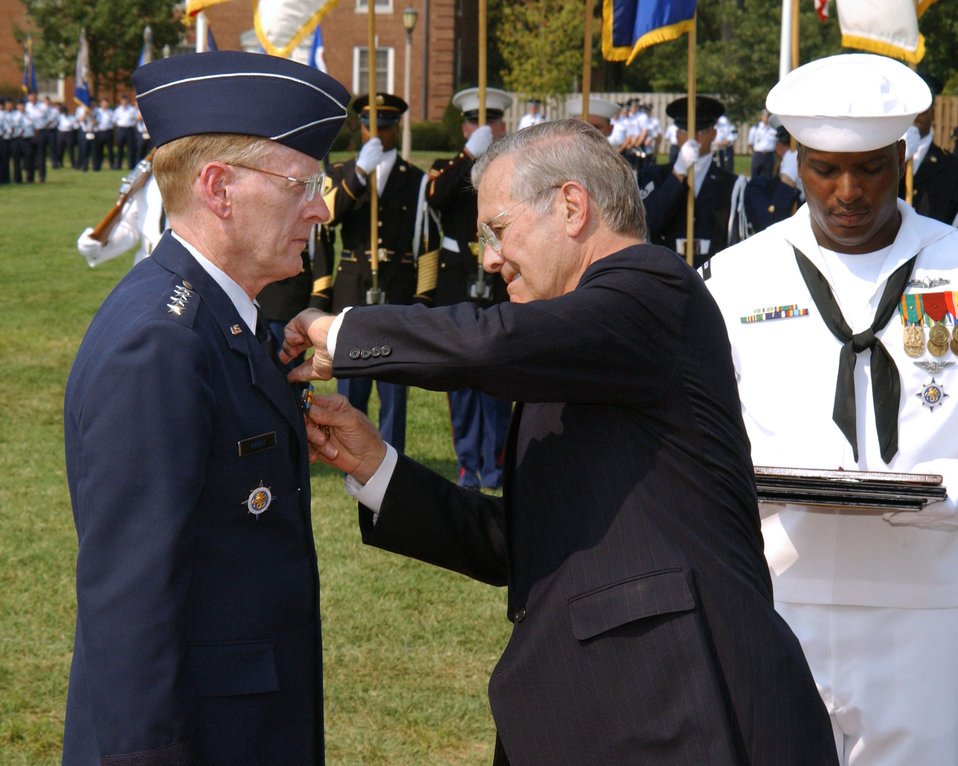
Schwartz takes reins of U.S. Transportation Command

SCOTT AIR FORCE BASE, Ill -- Defense Secretary Donald H. Rumsfeld pins the Distinguished Service Medal on outgoing U.S. Transportation Command commander Gen. John W. Handy during the TRANSCOM change of command ceremony here Sept. 7. Gen. Norton A. Schwartz assumed command.